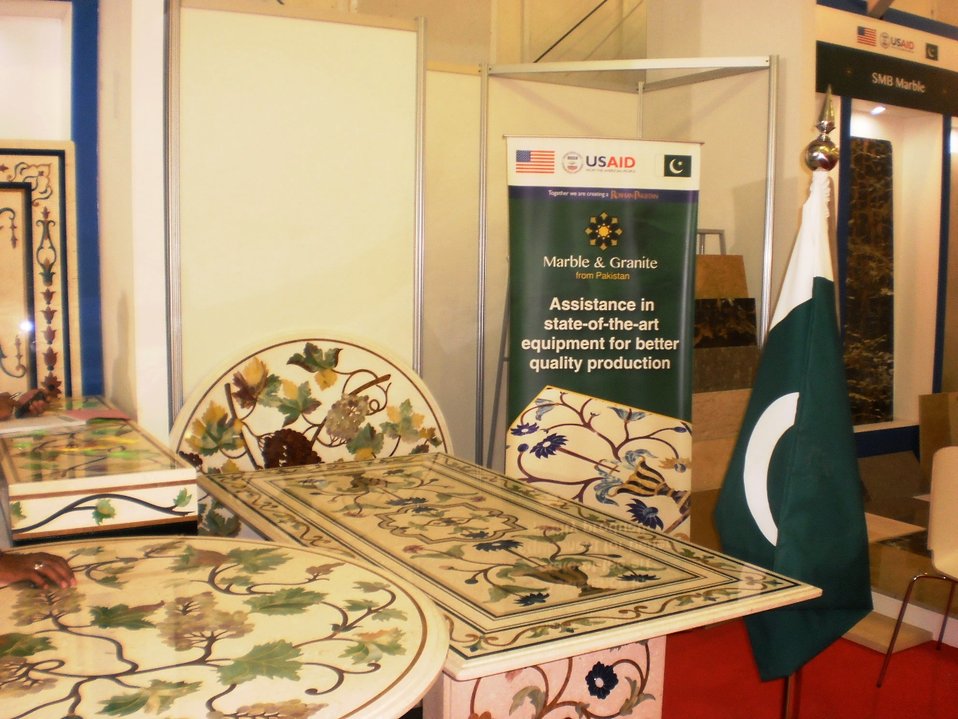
USAID Firms Project Marble and Granite sector participates in the BIG 5, largest construction show of Saudi Arabia

The USAID Firms Project, as part of its assistance to the Pakistani Marble and Granite sector, is facilitating partner businesses from the sector to market their products and services at local and international exhibitions